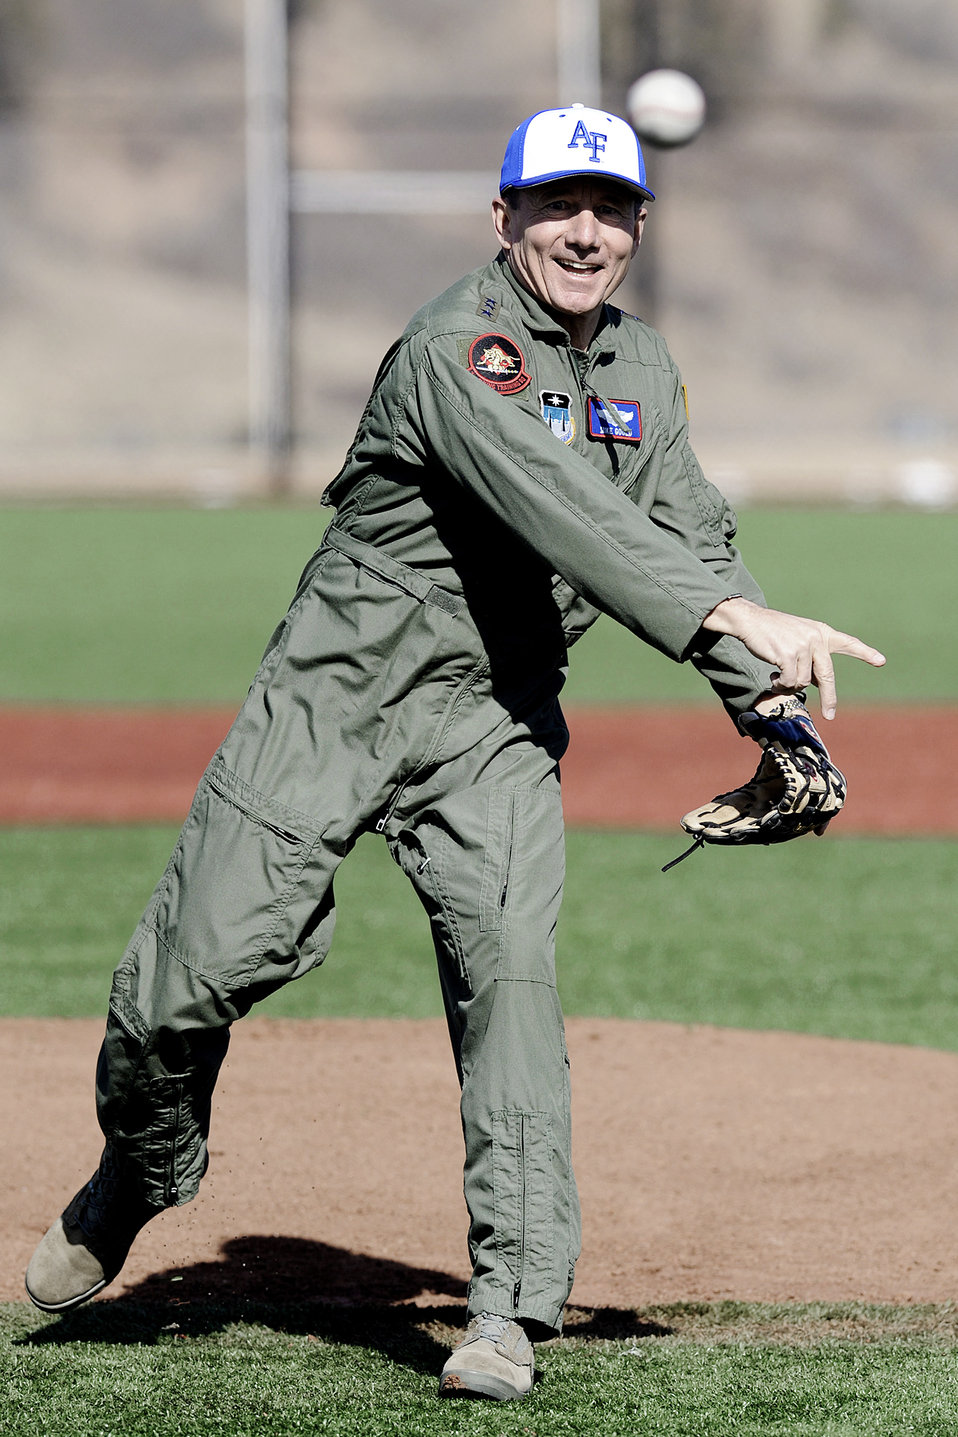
Falcons win baseball home opener

Air Force Academy Superintendent Lt. Gen. Mike Gould throws out the first pitch after dedicating the Falcons newly renovated baseball field at the Academy in Colorado March 2, 2010. The Air Force baseball team racked up 20 hits in a 15-5 victory over Colorado Christian in its home-opener.